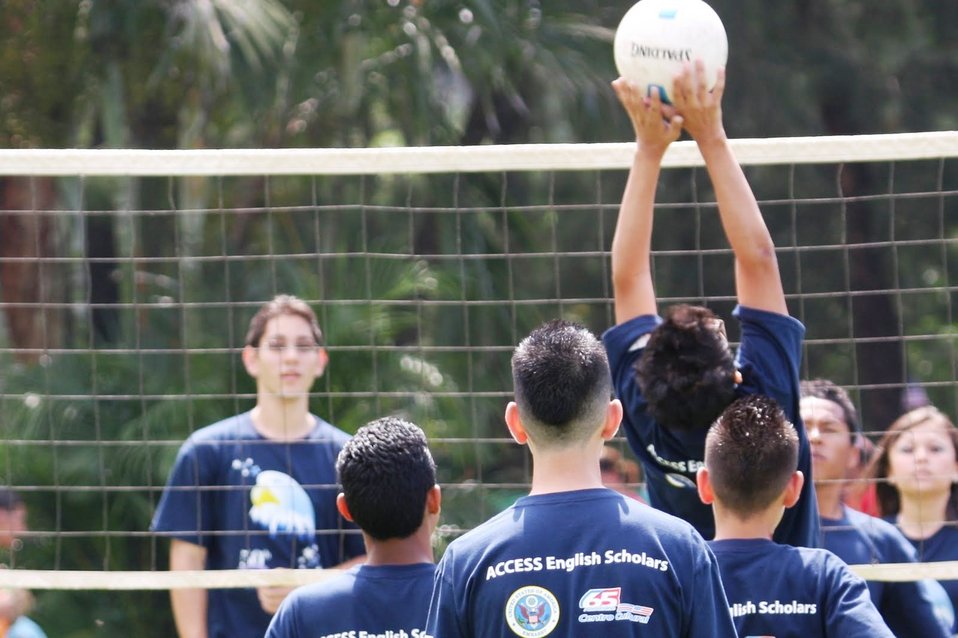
Students Play Volleyball

Students from U.S. Embassy San Jose in Costa Rica's English Access Microscholarship Program play volleyball during the U.S. Independence Day celebration on July 2, 2010, in San Jose, Costa Rica.